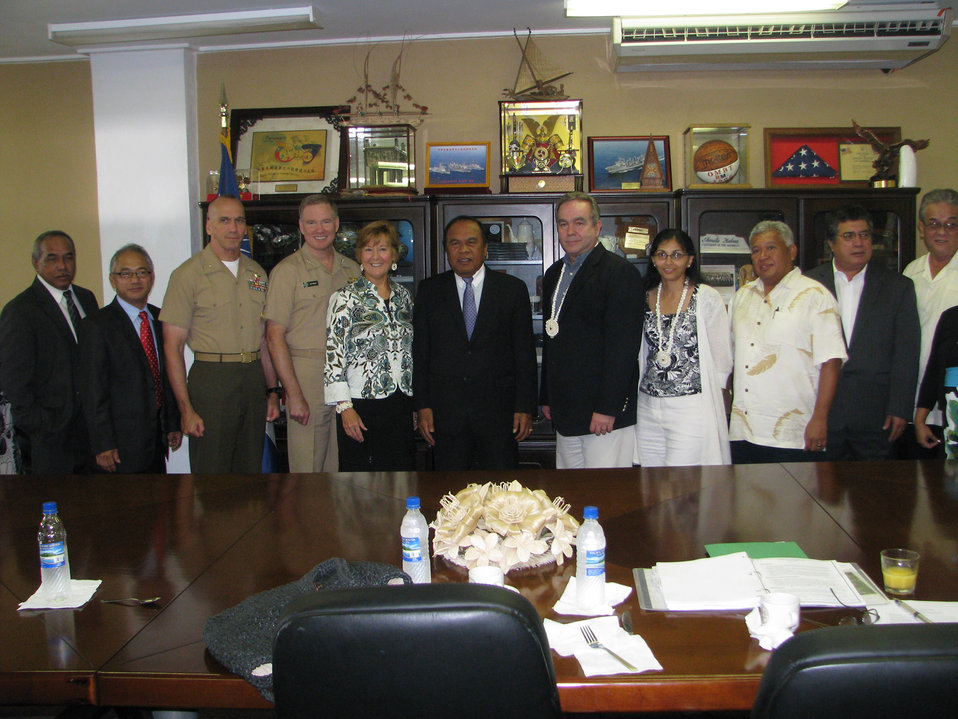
Assistant Secretary Campbell and Ambassador Campbell Pose for a Photo With Marshall Islands President Zedkaia and Other RMI Leaders Pose for a Photo

President of the Republic of the Marshall Islands (RMI) Jurelang Zedkaia, center, and other RMI leaders, pose for a photo with a U.S. delegation led by Assistant Secretary of State for East Asian and Pacific Affairs Kurt Campbell, right center, and joined by U.S. Ambassador to the Marshall Islands Martha Campbell, left center, in Majuro, Republic of the Marshall Islands, on July 2, 2011. Other members of the delegation, which are visiting nations throughout the South Pacific are Adm. Patrick Walsh, commander of U.S. Pacific Fleet; Office of the Secretary of Defense South/Southeast Asia Principal Director, Marine Corps Brig. Gen. Richard Simcock; and U.S. Agency for International Development (USAID) Assistant Administrator Nisha Biswal.